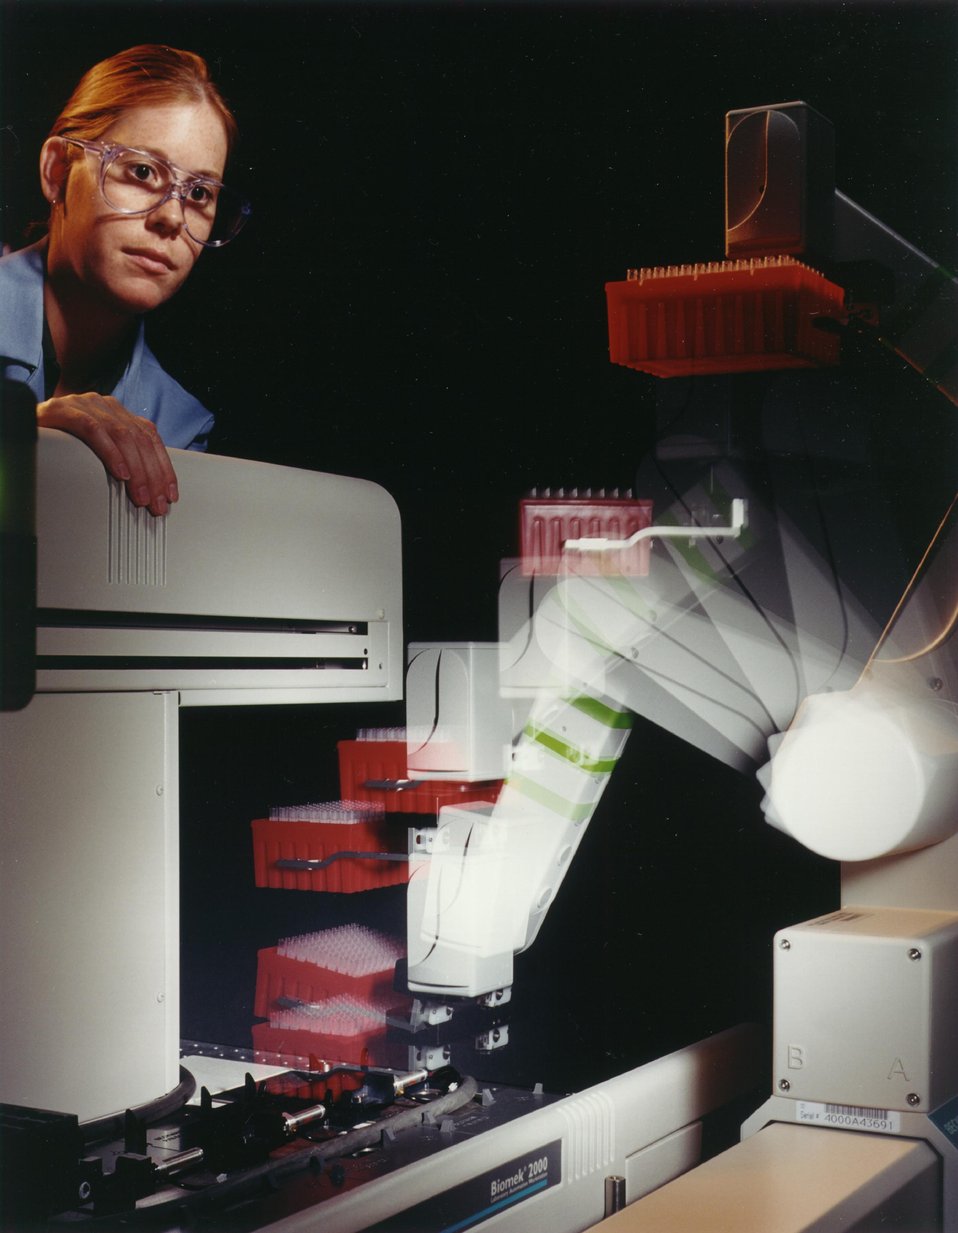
ANL SCIENTIST OVERSEES ROBOT WHICH PRODUCES 20 TIMES AS MANY PROTEIN CLONES AS A TRADITIONAL WET LAB.

AN ESSENTIAL PROCESS IN STUDYING THE HUMAN GENOME STRUCTURE IS TO FIRST CLONE A PROTEIN BY SNIPPING PIECES OUR OF ITS GENOME AND PLACING THEM IN 'EXPRESSION BACTERIA', WHICH MAKE MANY PROTEIN COPIES. ARGONNE RESEARCHERS CREATED A MODERN PRODUCTION LINE USING ROBOTS TO AUTOMATE THIS TIME CONSUMING CLONING TASK.